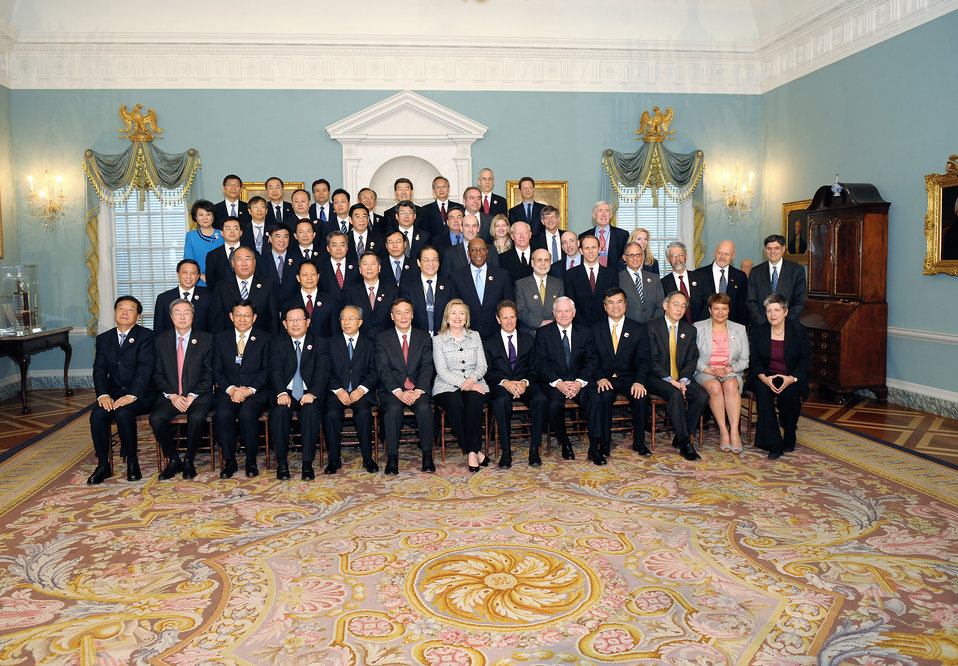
Secretary Clinton Poses for a Photo With U.S. and Chinese Delegates

U.S. Secretary of State Hillary Rodham Clinton, center in the ront row, participates in an official photograph with U.S. Secretary of the Treasury Timothy Geithner, sixth from the right in the front row; U.S. Secretary of Defense Robert Gates, fifth from the right in the front row; U.S. Secretary of Commerce Gary Locke, fourth from the right in the front row; U.S. Secretary of Energy Steven Chu, third from the right in the front row; Chinese Vice Premier Wang Qishan, Chinese State Councilor Dai Bingguo, as well as other senior members of the U.S. and Chinese delegations, at the U.S. Department of State in Washington, D.C., on May 9, 2011.